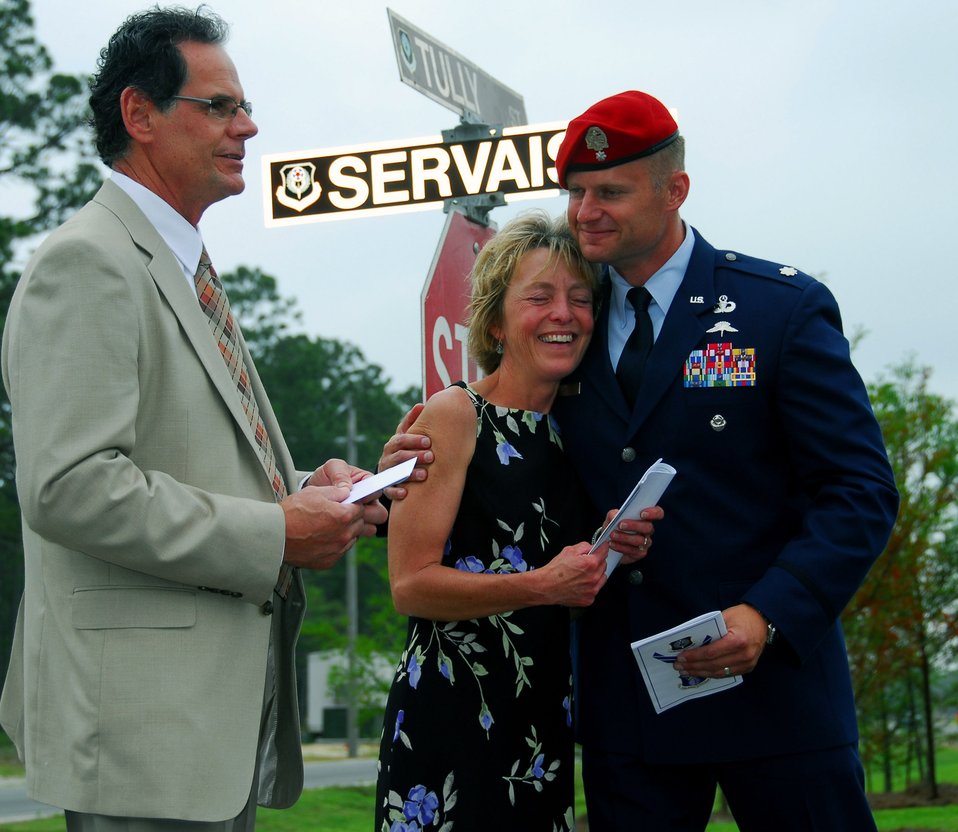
Fallen Airmen memorialized at Hurlburt

Sue Servais, mother of Senior Airman Adam Servais, a fallen Air Force combat controller, embraces Lt. Col. Eric Ray during a street-naming ceremony May 30 at Hurlburt Field, Fla. Airman Servais' father, Peter, looks on. Airman Servais was killed in a firefight in Afghanistan in August 2006. Colonel Ray is the 23rd Special Tactics Squadron commander.